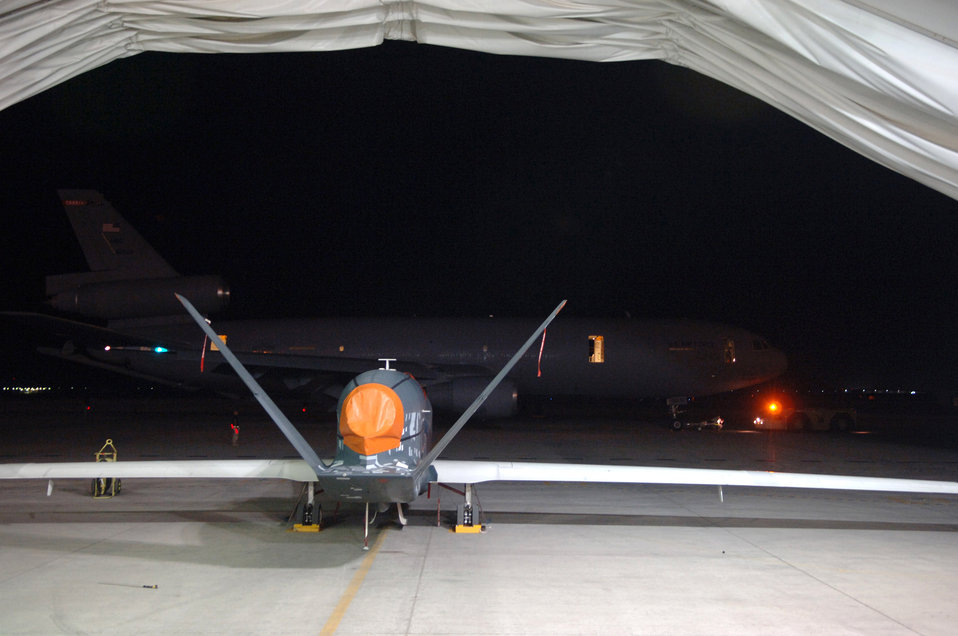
March 25 airpower summary: KC-10s provide vital refueling support

A KC-10 Extendor is towed to a parking spot while a Global Hawk unmanned aerial vehicle waits to be prepared for take off from a Southwest Asia air base.